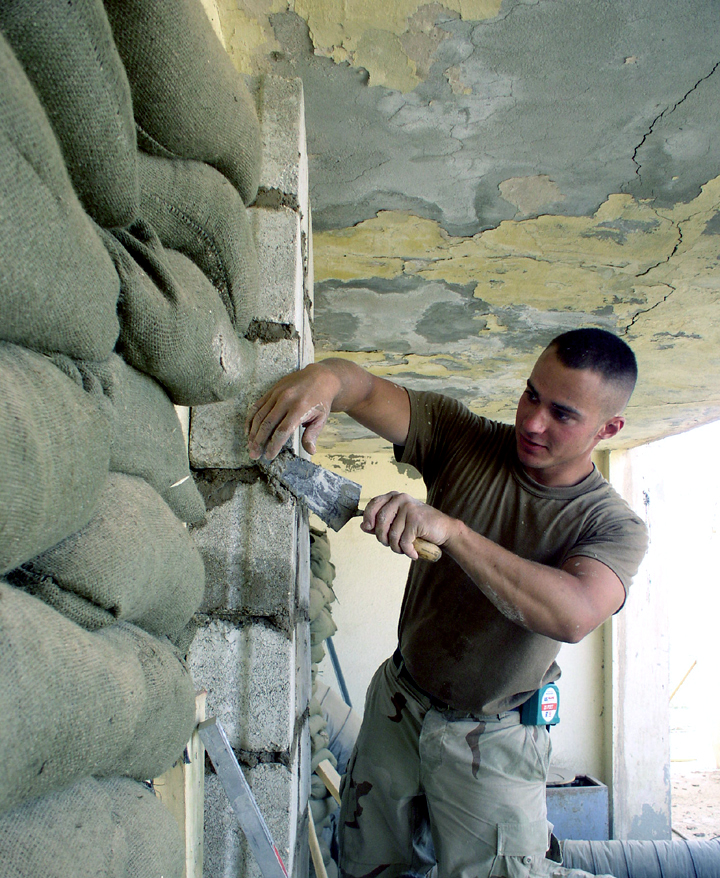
Building blocks

TALLIL AIR BASE, Iraq -- Airman 1st Class Ryan Heath installs concrete blocks over windows here May 17. The blocks are replacing sandbags as part of improvements. Airman Heath is with the 407th Expeditionary Civil Engineer Squadron supporting Operation Iraqi Freedom.